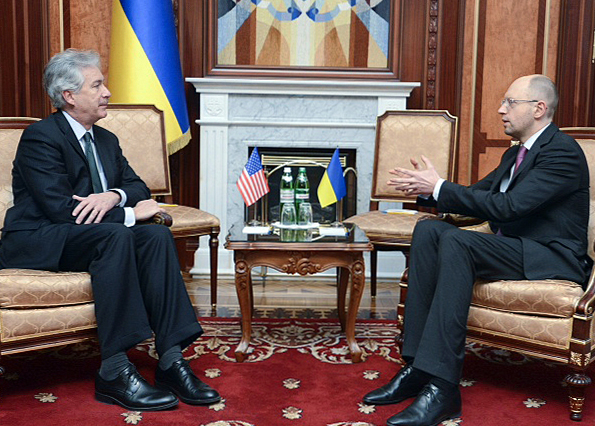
Deputy Secretary Burns Meets With Verkhovna Rada's Arseniy Yatsenyuk

Deputy Secretary of State Bill Burns meets with Arseniy Yatsenyuk of the of the Verkhovna Rada in Kyiv, Ukraine, on February 25, 2014.